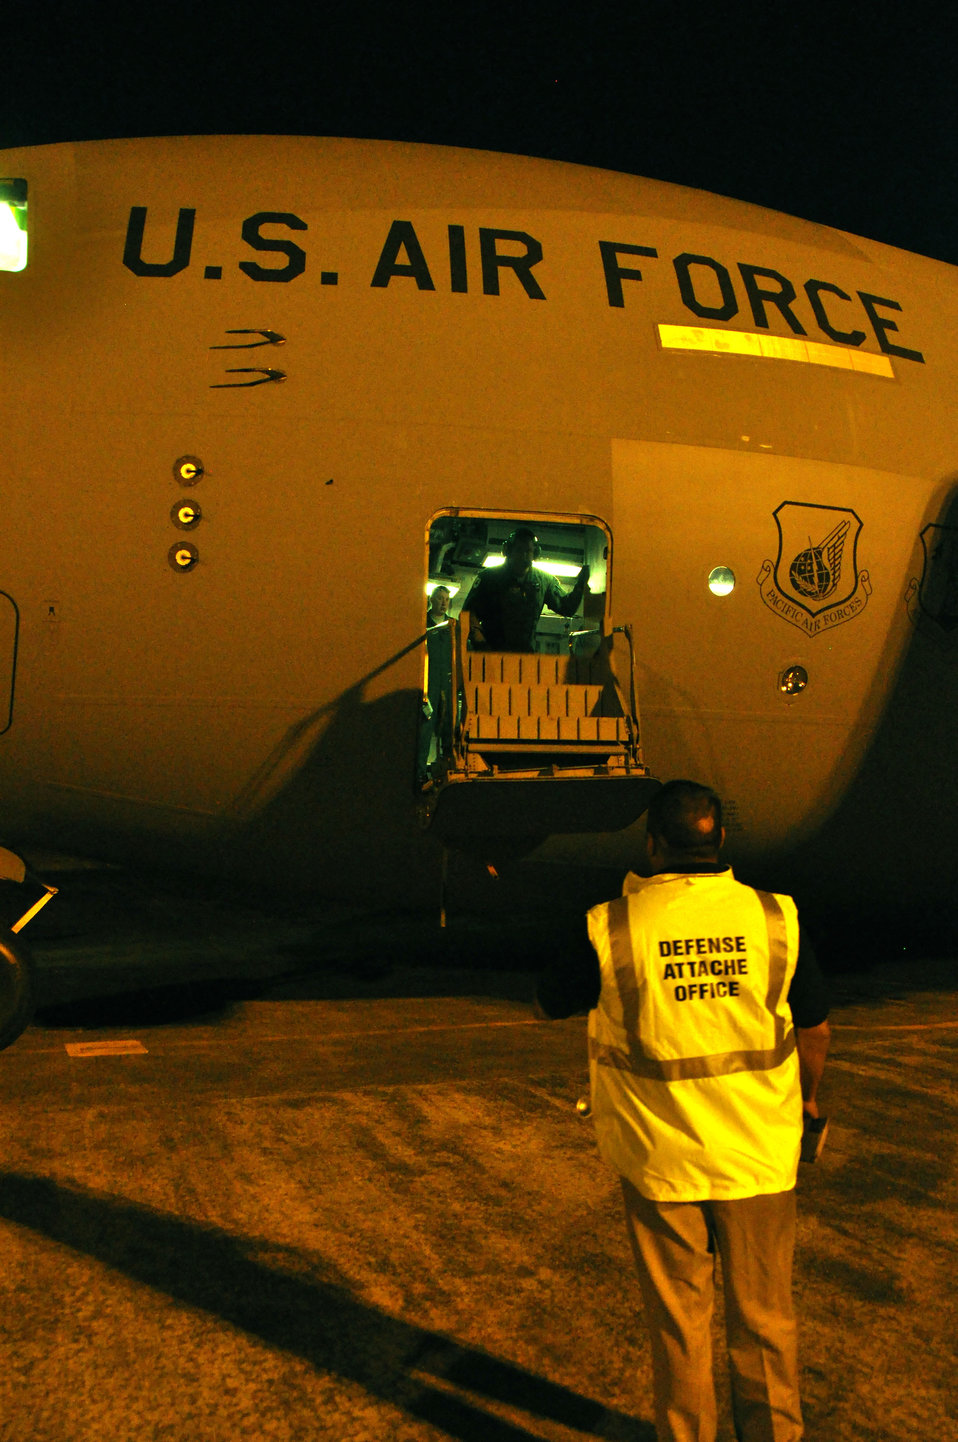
WHENUAPAI AIR SHOW 2009

U. S. Navy Chief Warrant Officer Lawrence Quevedo, the U.S. Defense Attache Office operations coordinator, prepares to greet the crew of a C-17 Globemaster III from the 517th Airlift Squadron at Elmendorf Air Force Base, Alaska, upon their arrival at Whenuapai Air Base, New Zealand, March 18 for the Whenuapai Air Show. This will be the first time since 1981 that a U.S. aircraft has participated in the annual event.